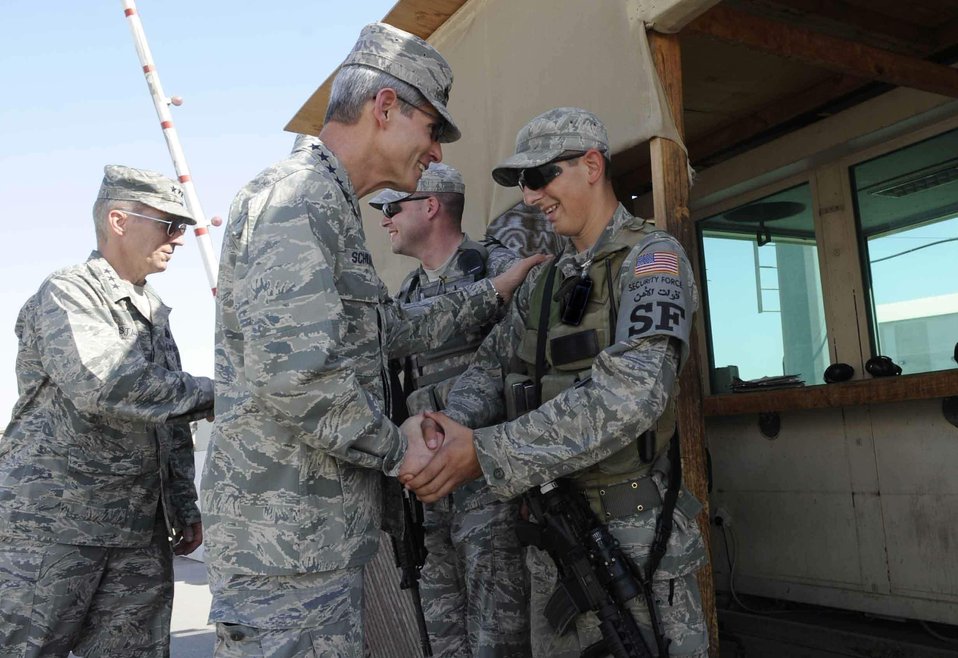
Chief of staff: Play your positions credibly

Air Force Chief of Staff Gen. Norton Schwartz meets Airman 1st Class Jeremy Breznai during a tour Nov 13. 2009, of an air base in Southwest Asia. Airman Breznai is a visits 380th Air Expeditionary Wing security forces member.